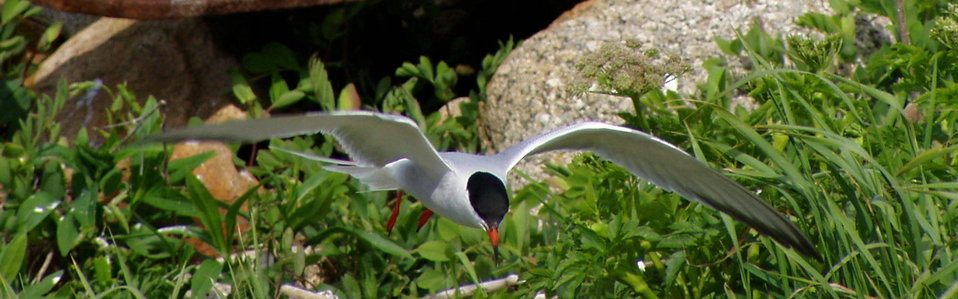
Common tern hovering at Maine Coastal Island National Wildlife Refuge